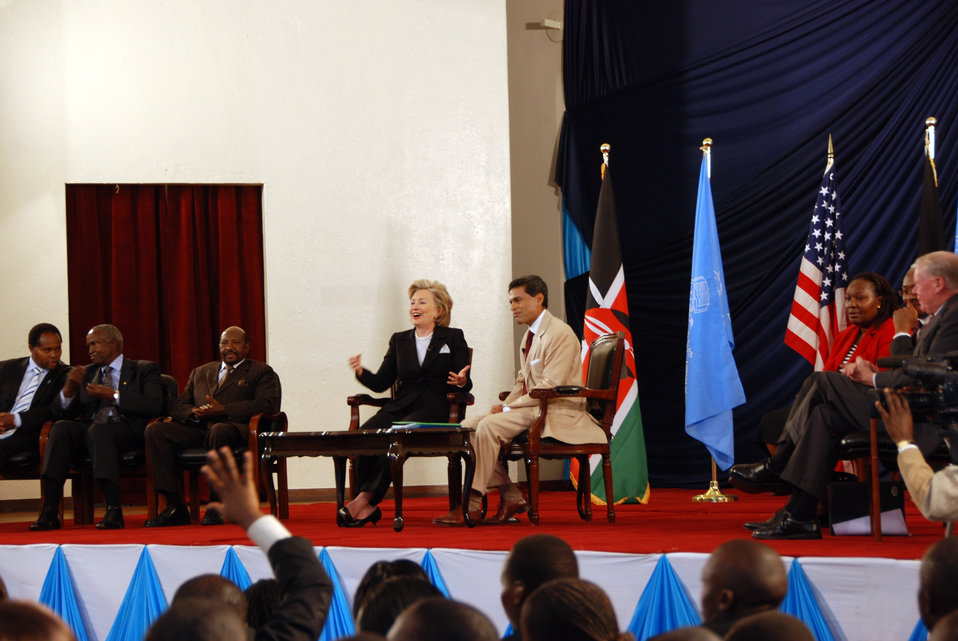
Secretary Clinton Participates in Town Hall Meeting

U.S. Secretary of State Hillary Rodham Clinton participates in a town hall meeting at the University of Nairobi in Nairobi, Kenya August 6, 2009.